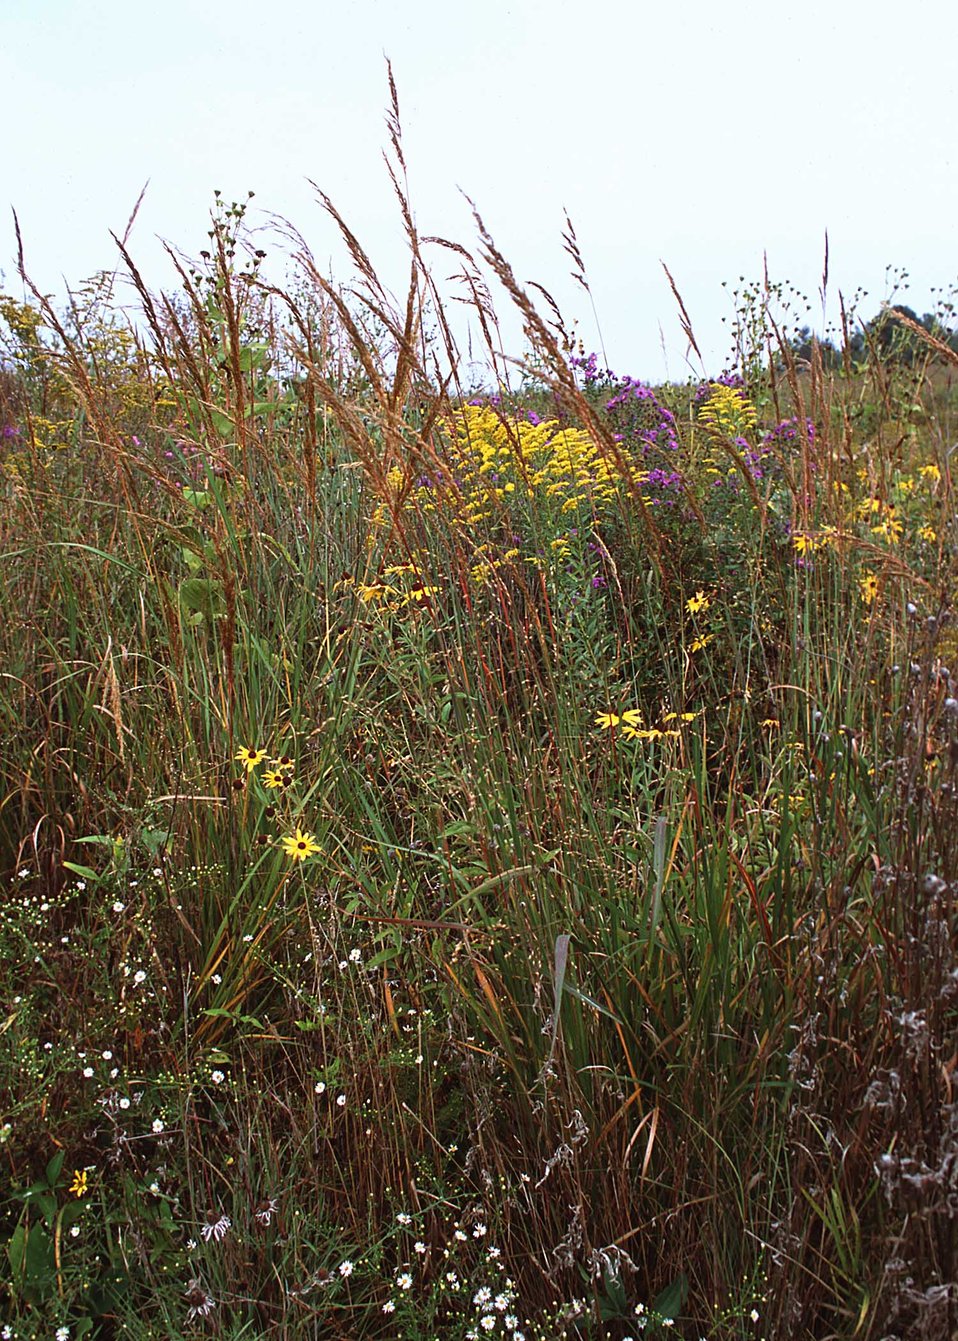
A mixture of native grasses and forbs intended to restore prairie grasses in Linn County, Iowa.